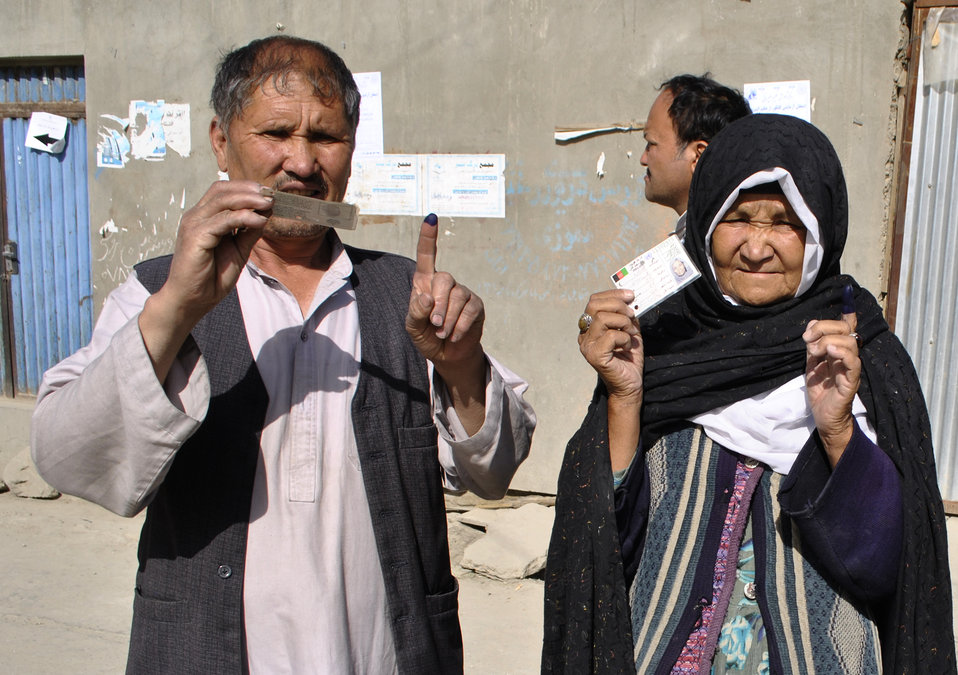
An elderly woman and her son after casting their votes show their fingers and voting cards to media in front of a polling station in 13th police district of Kabul province.